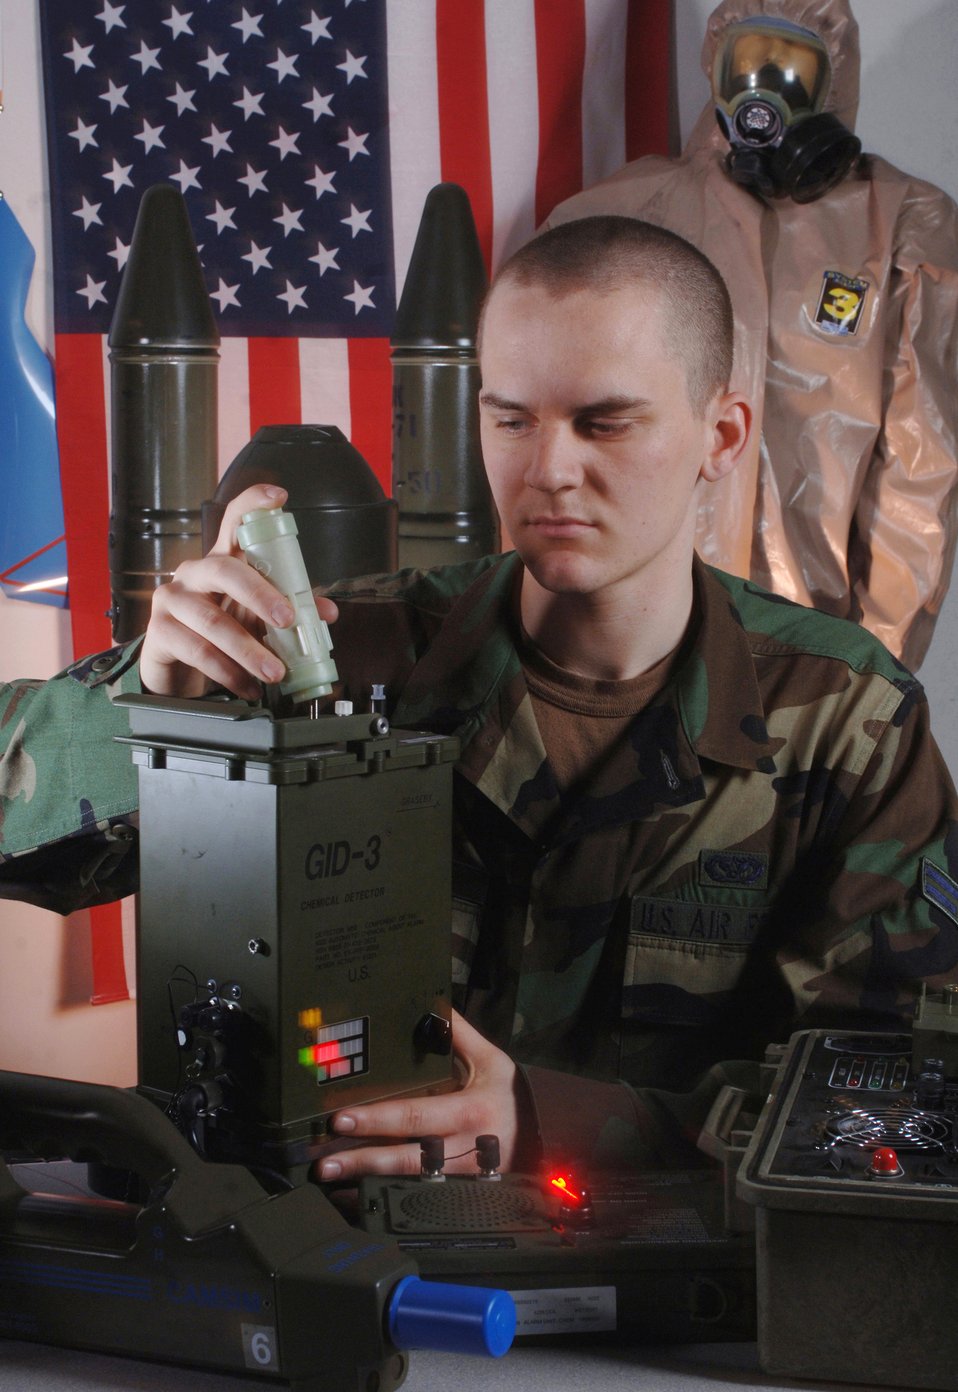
Mask inspection

Airman 1st Class Jonathan Marion inspects an automatic chemical agent detector assembly, which is used to detect nerve and blister agents. Airman Marion is a readiness technician with the 374th Civil Engineer Squadron at Yokota Air Base, Japan.